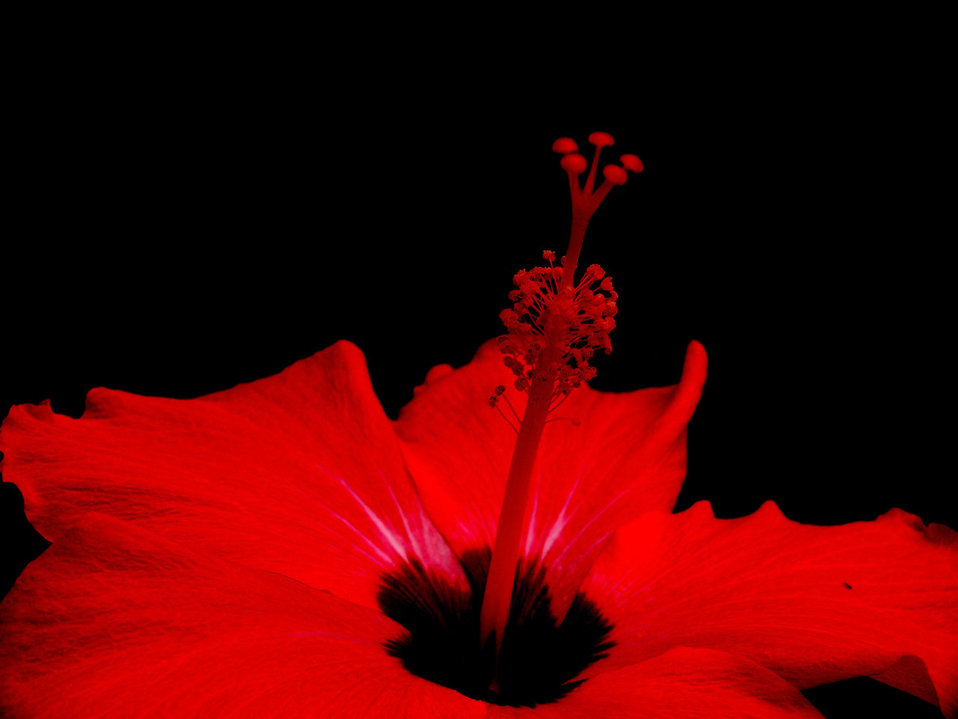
Red flower on black backround.